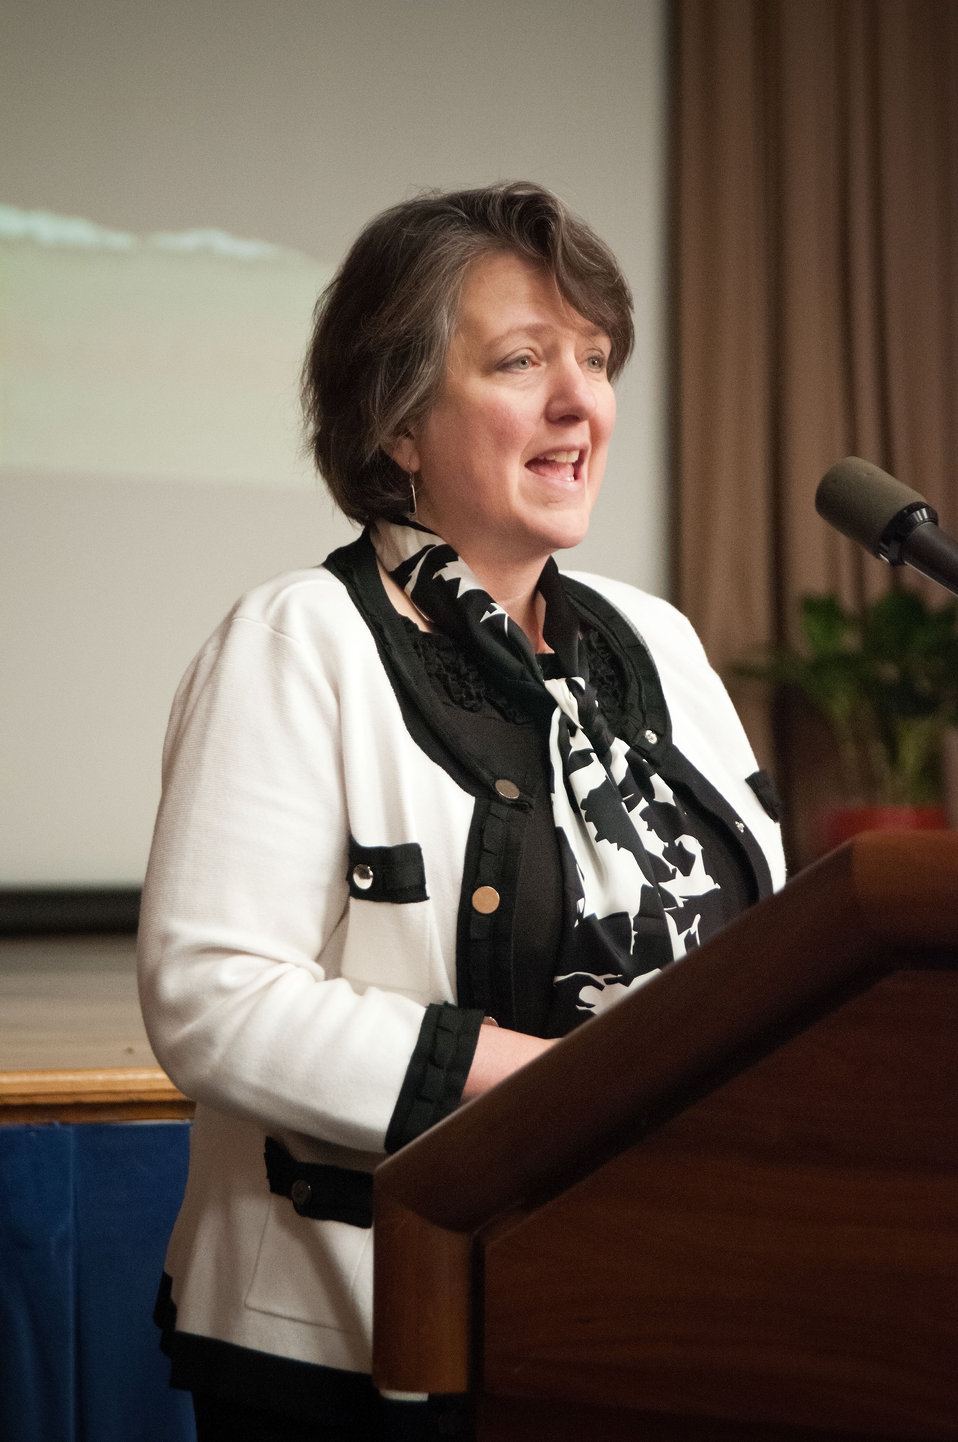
Dr. Kathleen Merrigan, Deputy Secretary introduces the keynote speaker Rep. Barney Frank, First Congressional District of Massachusetts and Ranking Member of the House Financial Services Committee at the Lesbian, Gay, Bisexual and Transgender (LGBT) Pride Observance, “The Sum of Us: Lesbian, Gay, Bisexual and Transgender Pioneers” at the United States Department of Agriculture in Washington, D.C., Thursday, June 7, 2012.